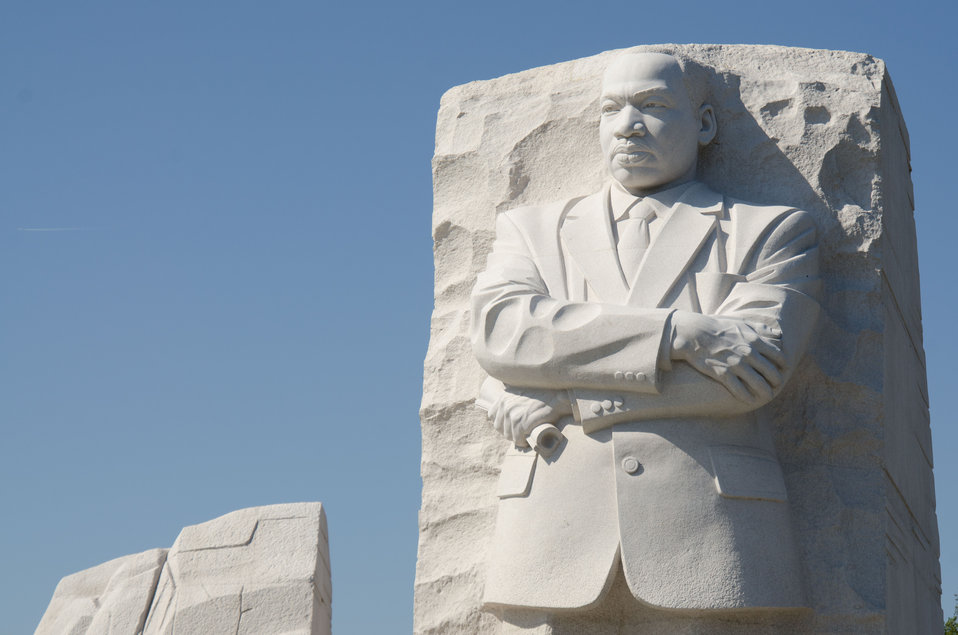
Martin Luther King, Jr. Memorial in Washington, DC, on Saturday, October 8, 2011.